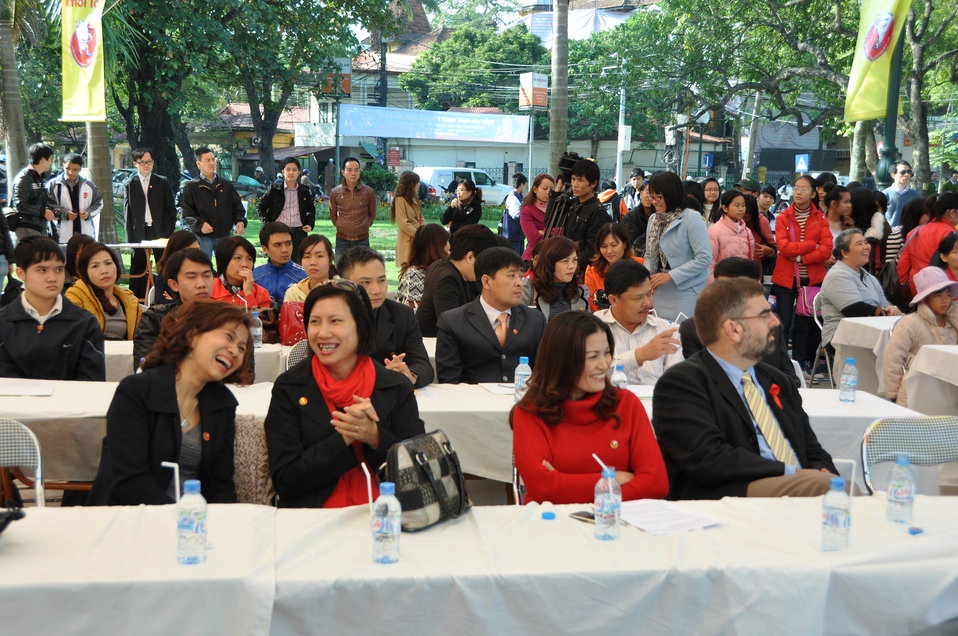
100% Condom Use Campaign Launch, Dec. 2, 2011